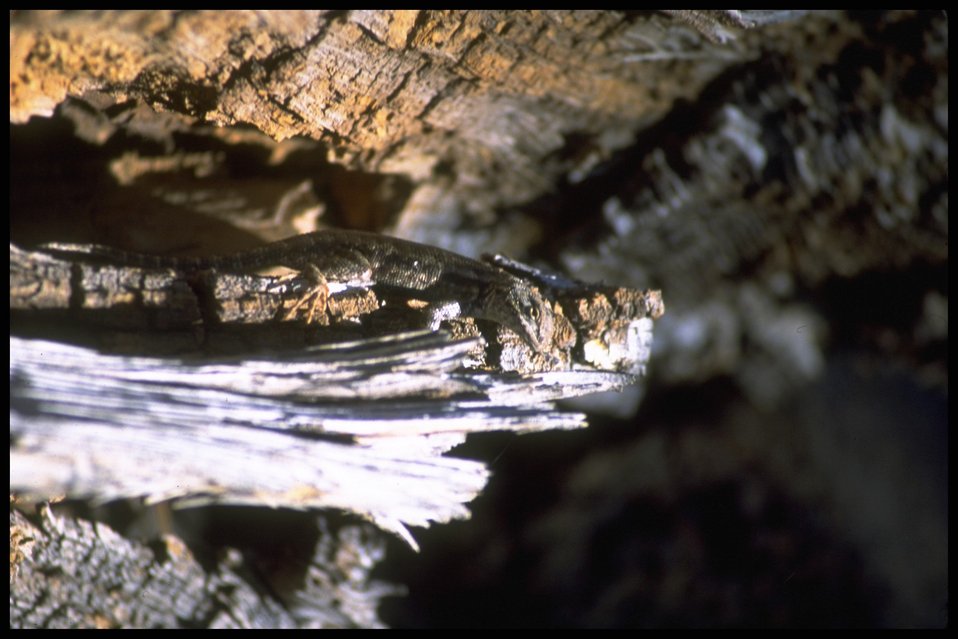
Close shot of Lizard. Lakeview District.